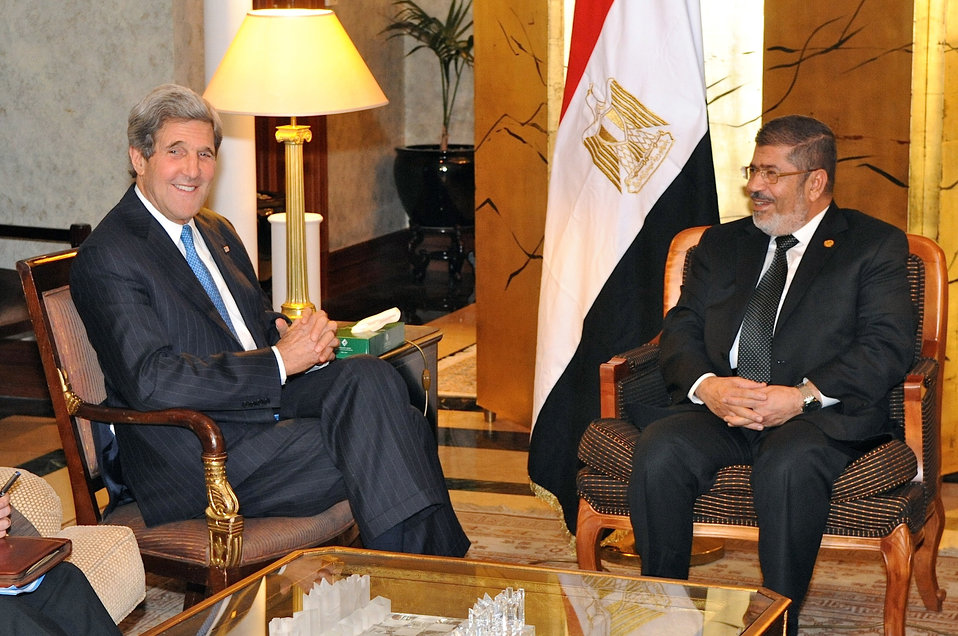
Secretary Kerry Meets With Egyptian President Morsy in Addis Ababa

U.S. Secretary of State John Kerry meets with Egyptian President Mohamed Morsy, as the two attend the 50th anniversary African Union Summit in Addis Ababa, Ethiopia, on May 25, 2013.